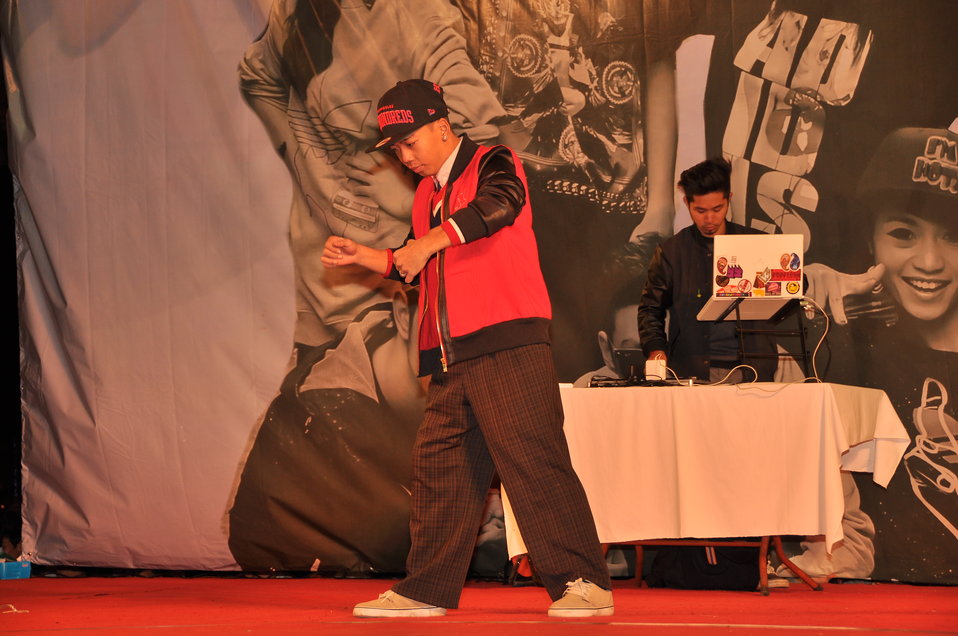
USAID and PEPFAR supports an outdoor concert to promote Vietnam's national action month for HIV

Hanoi, December 18, 2012.